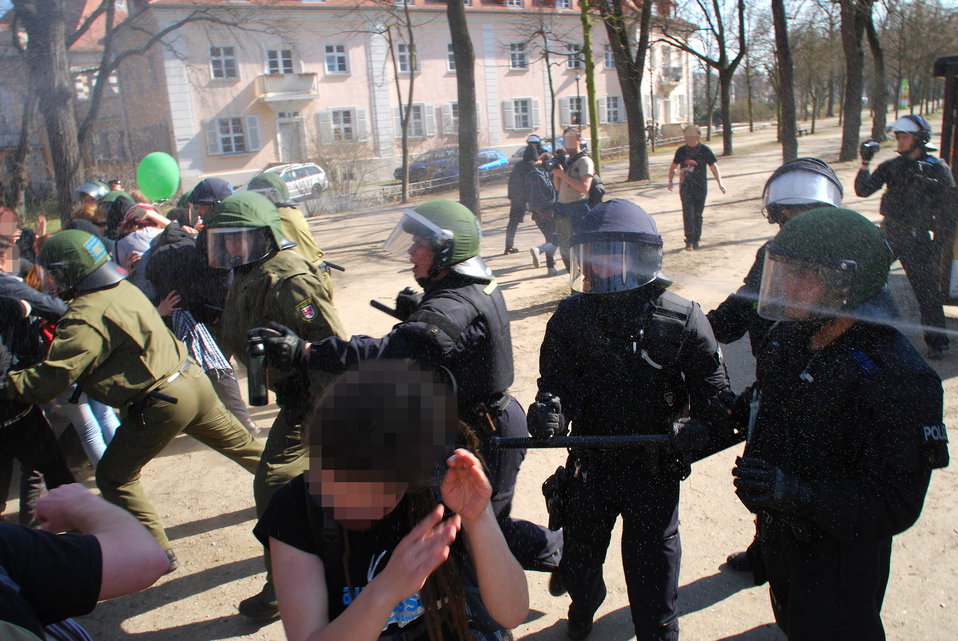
Proteste gegen den Nazi-Aufmarsch am 24.3.2012 in Frankfurt (Oder)